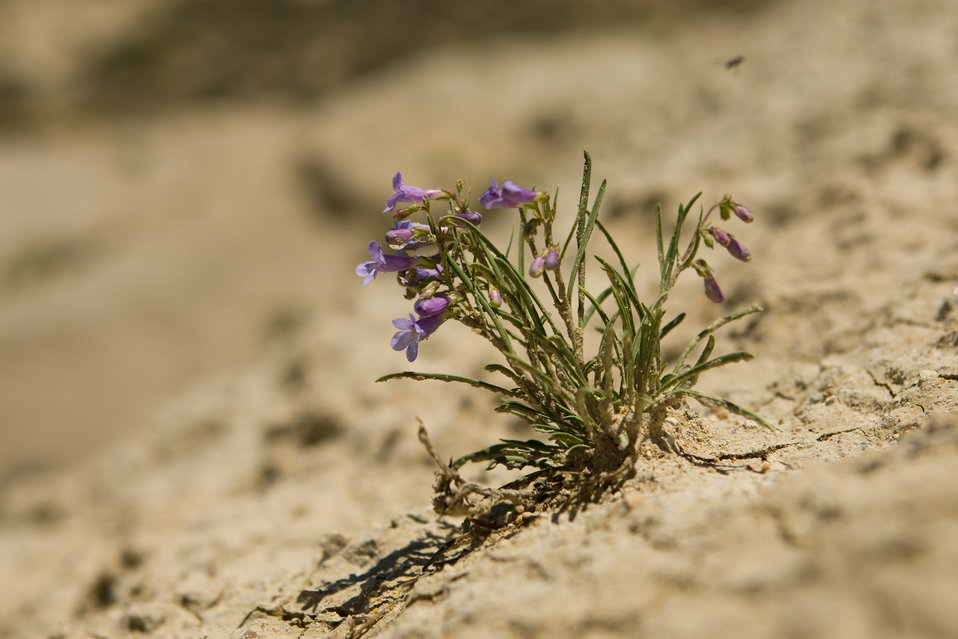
Colorado Rare Plant Conservation Initiative

The Colorado Rare Plant Conservation Initiative (RPCI) is a partnership of 23 statewide and regional agencies, private organizations, and academic institutions working to conserve 121 rare plants in Colorado. As part of these efforts the group developed the Colorado Rare Plant Conservation Strategy, developed Best Management Practices to reduce energy development impacts, addressed climate change, and developed focused strategies for the conservation of individual species at eight priority landscapes. The group has also worked to coordinate volunteer efforts for plant conservation across the state.